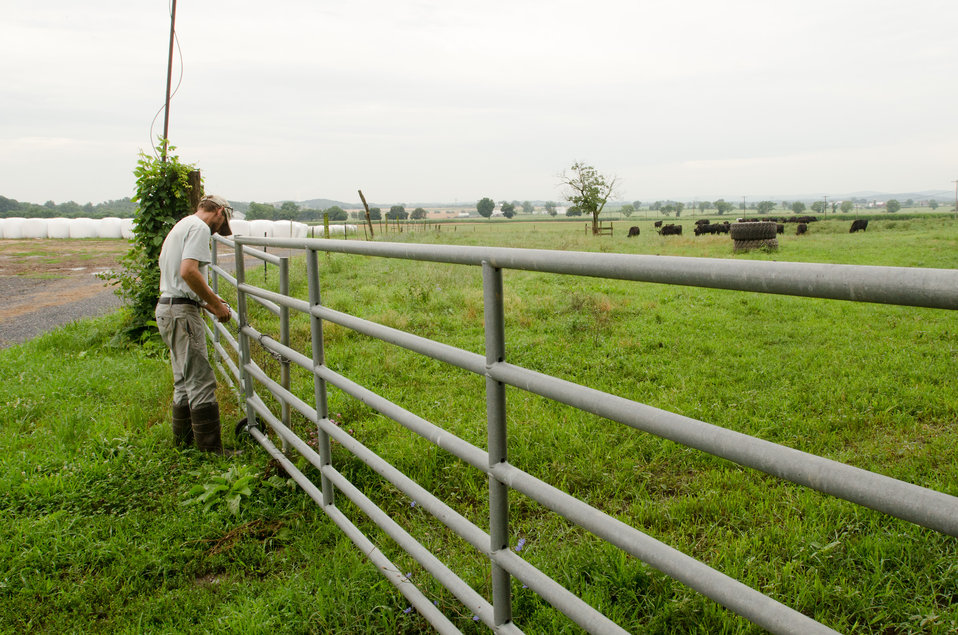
Farm Assistant George Kloph uses a tractor and silage bale spreader to lift and feed the herds of Black Angus cattle at Nick’s Organic Farm, owned by Nick Maravell, in Adamstown, MD on Friday, July 12, 2013. The white plastic wrapped bales of pasture grass and alfalfa have been fermenting for months to create sweet silage that stores well and can be used to feed cattle at varying amount all year long. The fermentation process sweetens the taste and increases the vitamin levels in it. The farm produces Black Angus beef, chicken, turkey, eggs, hay, soybeans, corn, alfalfa, orchard grass, rye; and other crops. The cattle are 100% grass-fed receiving certified organic pasture, certified organic hay (in winter), water and mineral salts mixed with sea kelp. The cattle are not fed hormones, antibiotics or animal products. Poultry feed from grain is ground from organic grain. The poultry also graze on organic pastures. The farm has conducted on-farm research with federal, state and non-profit agencies to refine organic practices. An organization such as the U.S. Department of Agriculture (USDA) Agricultural Research Service (ARS) center in Beltsville has been able to conduct research to improve organic crops and to breed and manage the cattle so that they have.